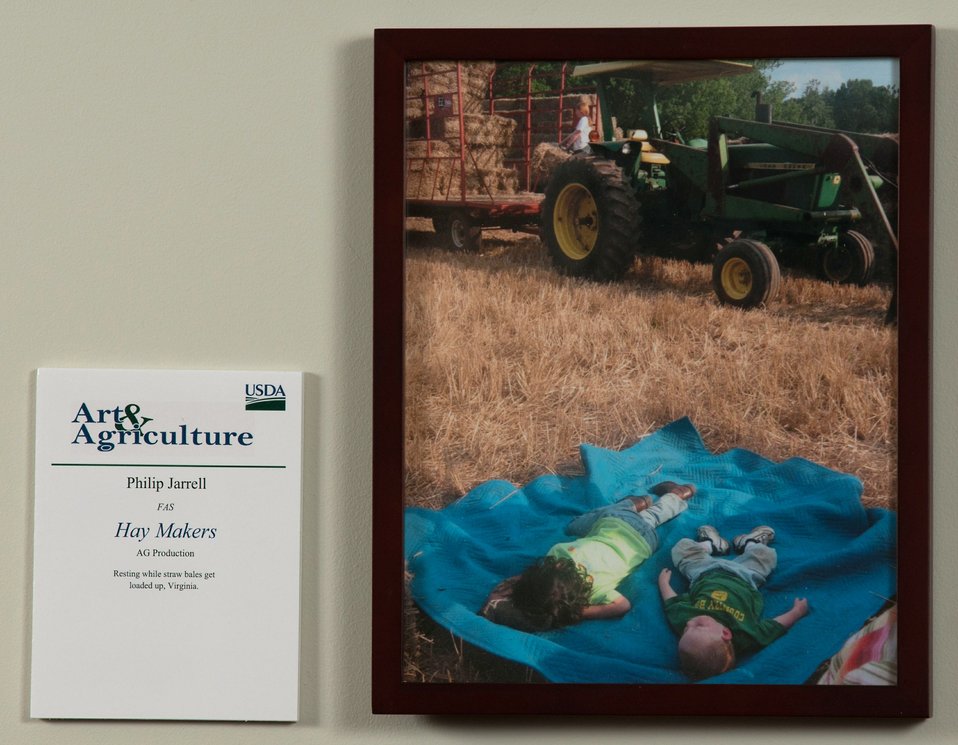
Online Viewer's Choice entries of the 2013 Art & Agriculture, Tuesday, July 9, 2013, in the South Building, Washington, D.C. Themes were expressed by employees from across the department and the contest was open to full-time and part-time USDA employees. Winning artwork will be displayed till the end of the year. U.S. Artistic expression is a creative outlet that is vital for an individual to grow and develop.